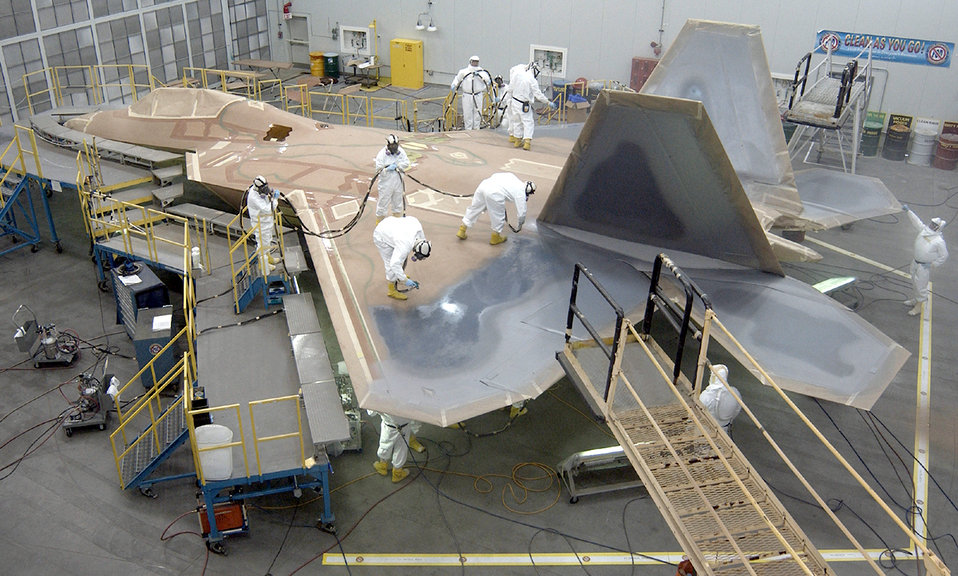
Hatching a Raptor

MARIETTA, Ga. (AFPN) -- Employees at the Lockheed Martin Aeronautics Company assembly plant here paint the first operational F/A-22 Raptor to be delivered to the Air Force. The jet, Raptor 18, will be used to train pilots in the 43rd Fighter Squadron at Tyndall Air Force Base, Fla. One aircraft each month is expected to arrive at Tyndall following Raptor 18's arrival.